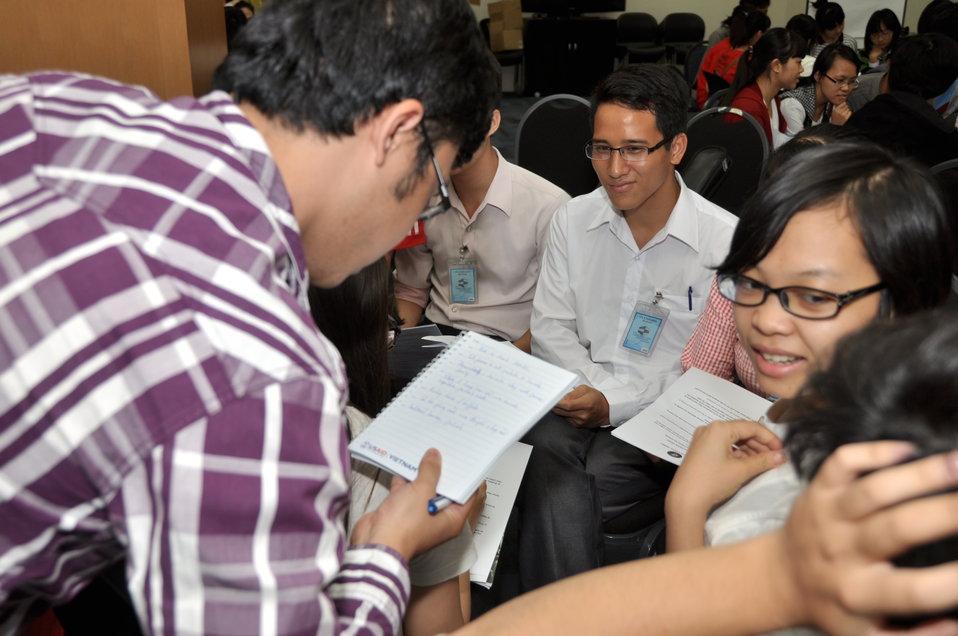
Vietnamese university students join the Business Plan Mashup exercise

Photo: @USAIDVietnam, November 16, 2012